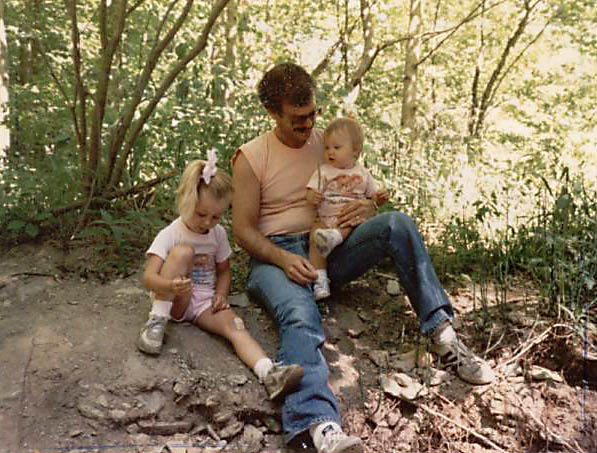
Uploaded by request of Charles McCarthy.

Taken at the Pine Hills Nature Preserve near Shades State Park in Indiana.

The picture shows my two daughters Kendra and Kelly enjoying a day in the forest with me. I am dedicated to teaching my children the value as well as the beauty of nature.